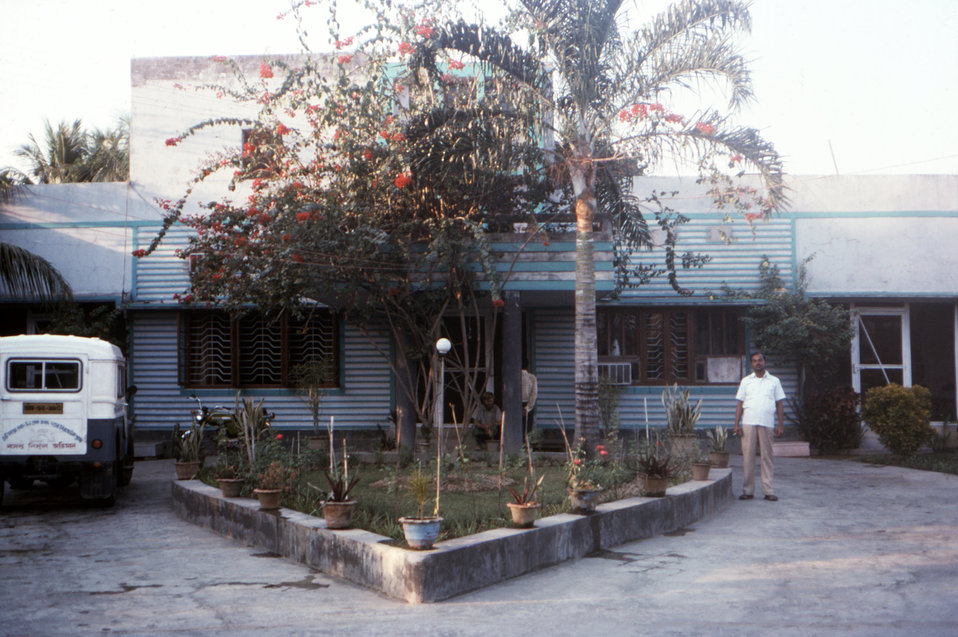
Depicted in this December, 1975 photograph, was the exterior of the World Health Organization's (WHO) residence, located in the country's capital, Dhaka. See PHIL 12366, for another view of the WHO residence.